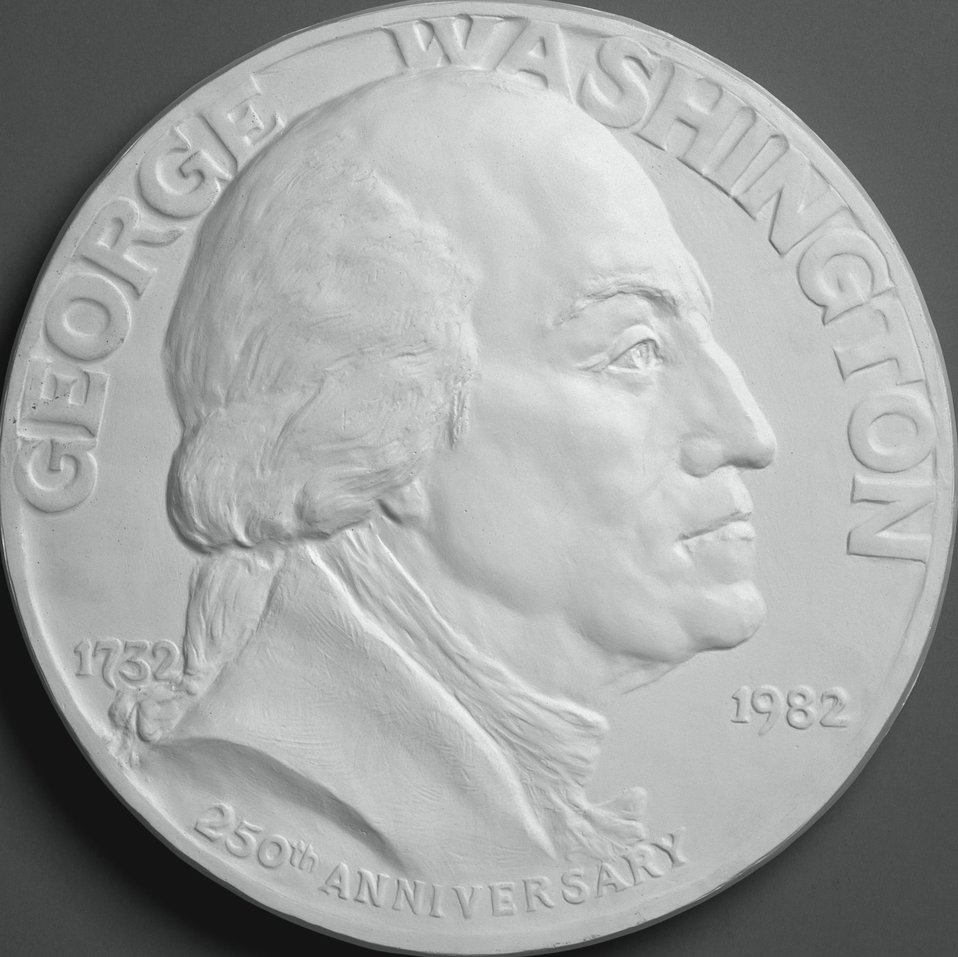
Plaster mold for the obverse (front) of a 1982 commemorative medal from the U.S. Capitol Historical Society, which celebrated the 250th anniversary of George Washington's birth on the front, and the 200th anniversary of the Great Seal of the United States on the back.